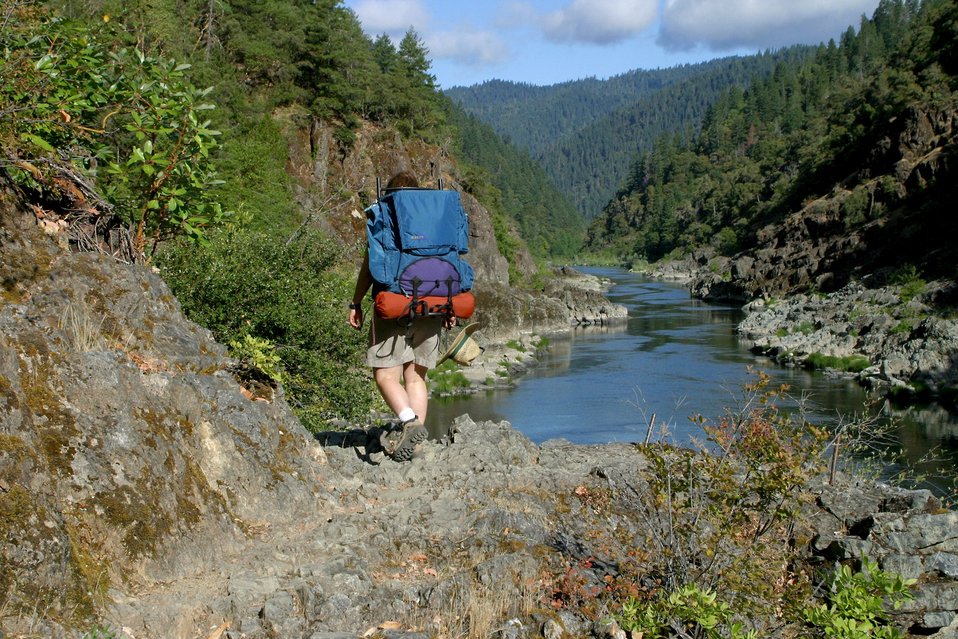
Hiking Rainie Falls Trail between Grave Creek and Rainie Falls.